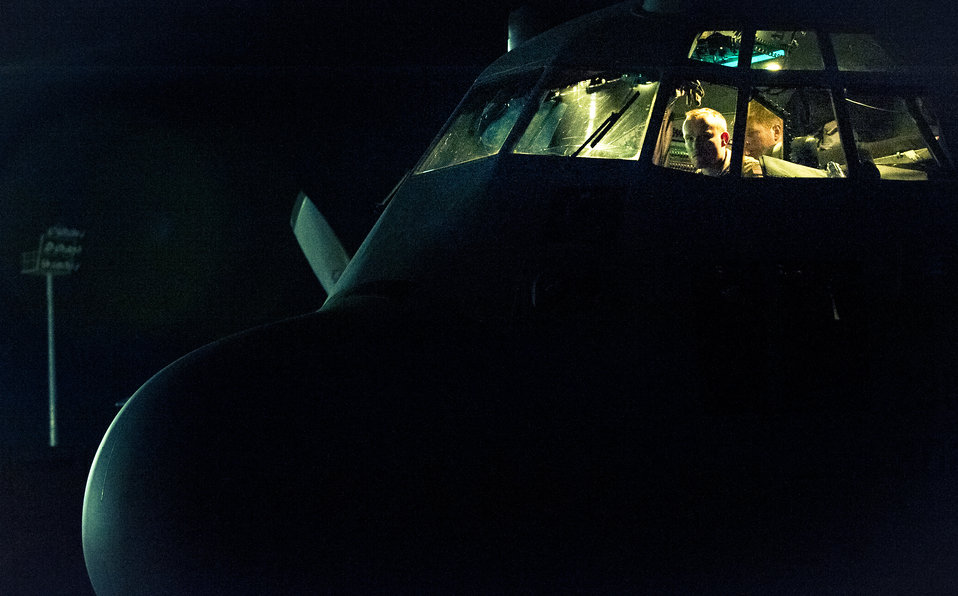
Hercules: A day in the life

An aircrew member assigned to the 774th Expeditionary Airlift Squadron performs preflight checks aboard a C-130H Hercules prior to a night flight at Bagram Airfield, Afghanistan, June 2, 2012. Bagram Airfield’s C-130H aircrews fly day and night to transport personnel and supplies throughout Afghanistan.